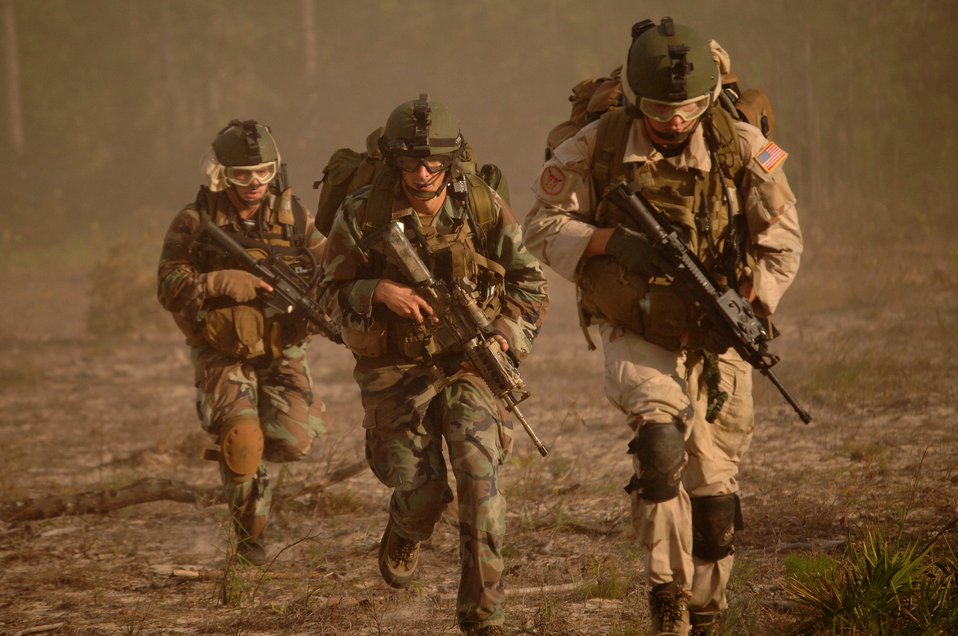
Combat search and rescue training

Combat control and pararescue trainees run to their rally point after off-loading a helicopter Sept. 7, 2007, at Hurlburt Field, Fla. The special tactics Airmen were conducting a combat search and rescue training scenario on base at Eglin Air Force Base, Fla. AST is the last phase of training for combat controllers before they report to operations special tactics squadrons.